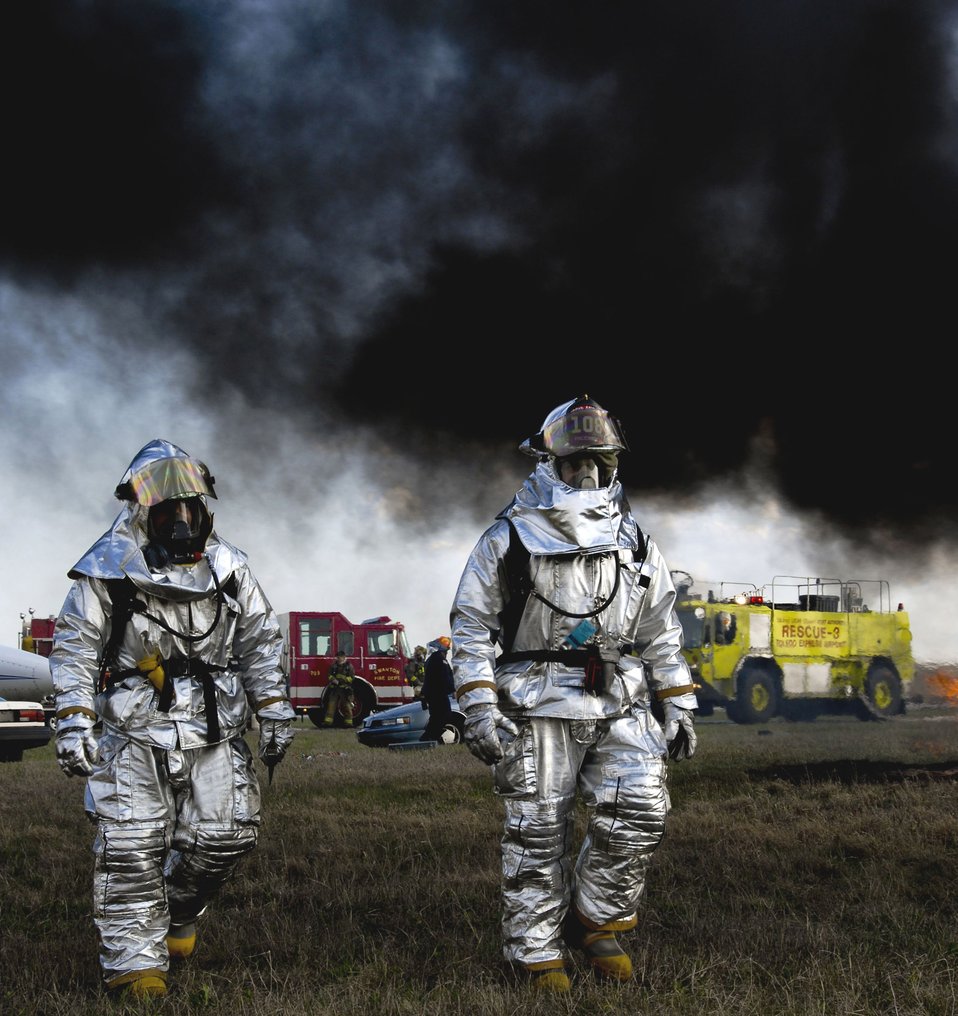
It's only an exercise!

Two firefighters from the Ohio Air National Guard's 180th Fighter Wing fire department participate in an aircraft crash and recovery exercise April 22 at the Toledo Express Airport. The drill tests the response of local emergency, fire and rescue crews that normally would respond to such an incident.